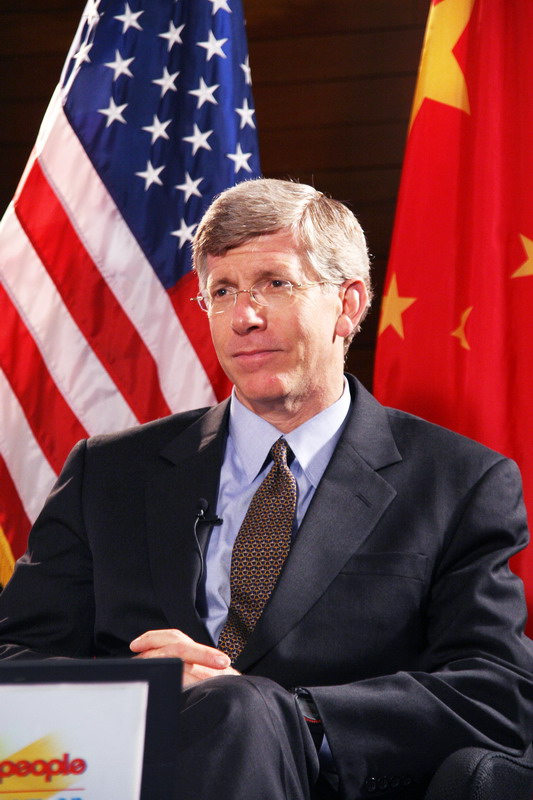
Deputy Secretary Poneman does a webchat with Chinese media.